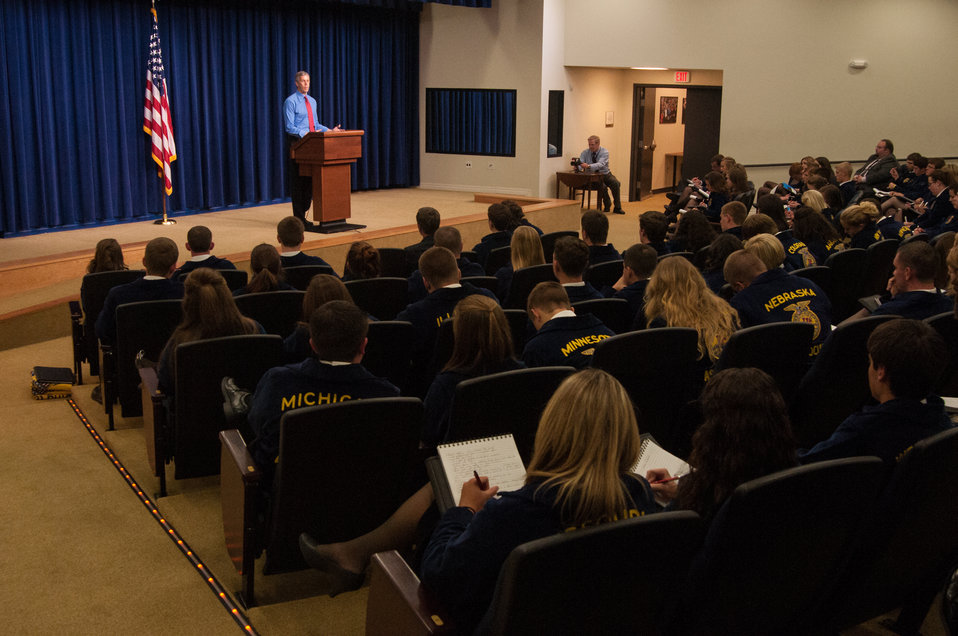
Education Secretary Arne Duncan speaks at a meeting of the White House Rural Council to an audience of the National State President’s Conference of the FFA on Wednesday, Jul. 24, 2013 in Washington, D.C. Secretary Duncan topics related to education and the importance of an education.